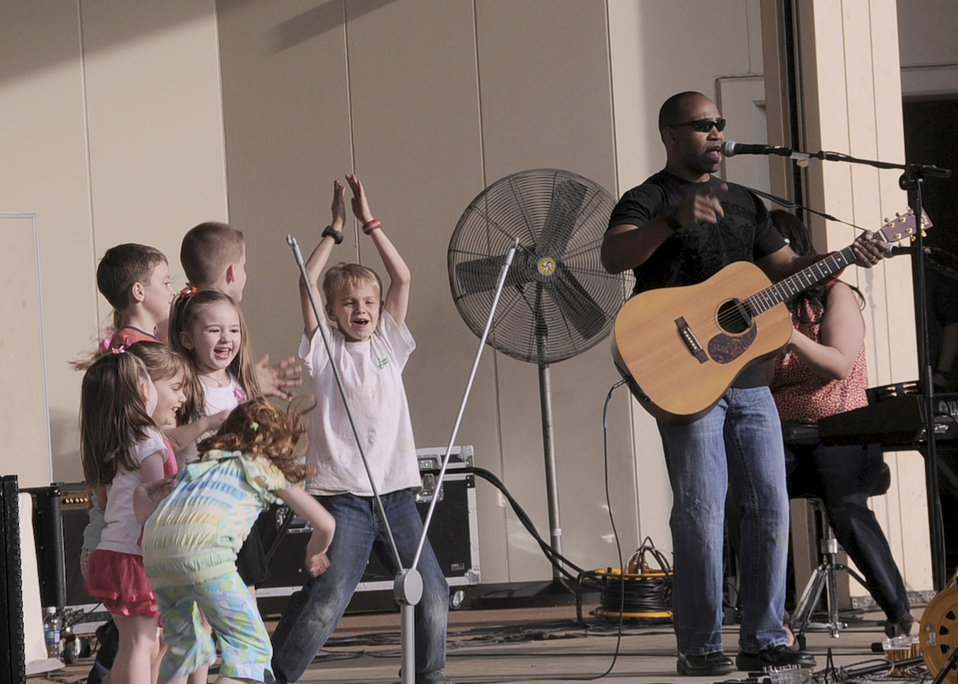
Yokota community raises $24K for relief efforts

YOKOTA AIR BASE, Japan -- Children dance on stage April 16, 2011, at Yokota Air Base, Japan, as the band Days Gone By performs during Tomodachistock 2011. More than 700 people gathered at the free event to enjoy music and food while helping the American Red Cross raise money to support the earthquake and tsunami relief efforts.